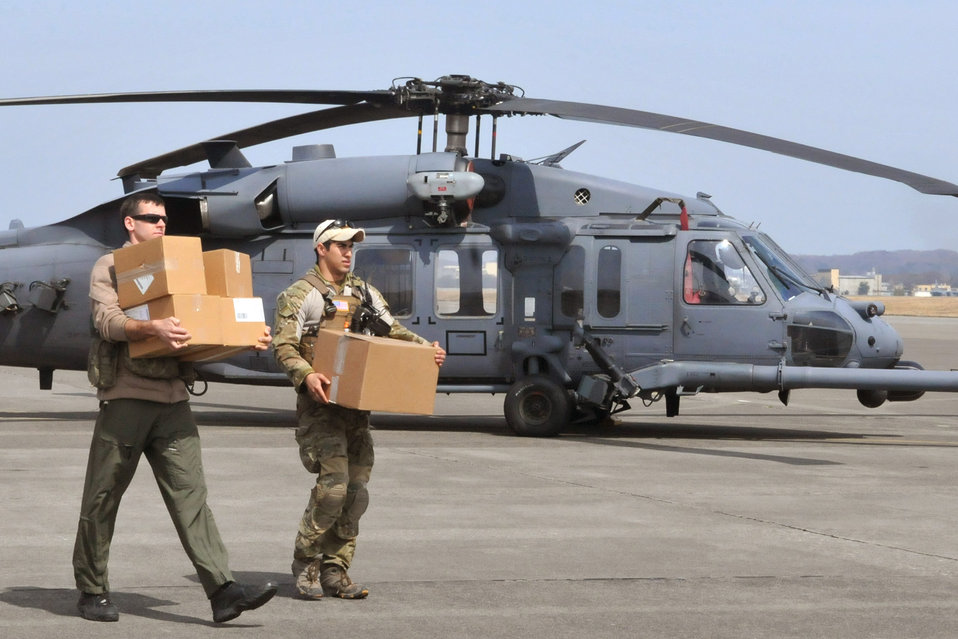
HH-60s deliver supplies to decimated Kessenuma City

Two Airmen carry medical supplies to an HH-60G Pave Hawk prior to take off March 20, 2011, at Yokota Air Base, Japan. Airmen from the 33rd Rescue Squadron successfully transported supplies to displaced peoples in Kessenuma City, in support of Operation Tomodachi. Kessenuma experienced massive destruction from the earthquake and tsunami in northeastern Japan, March 11.